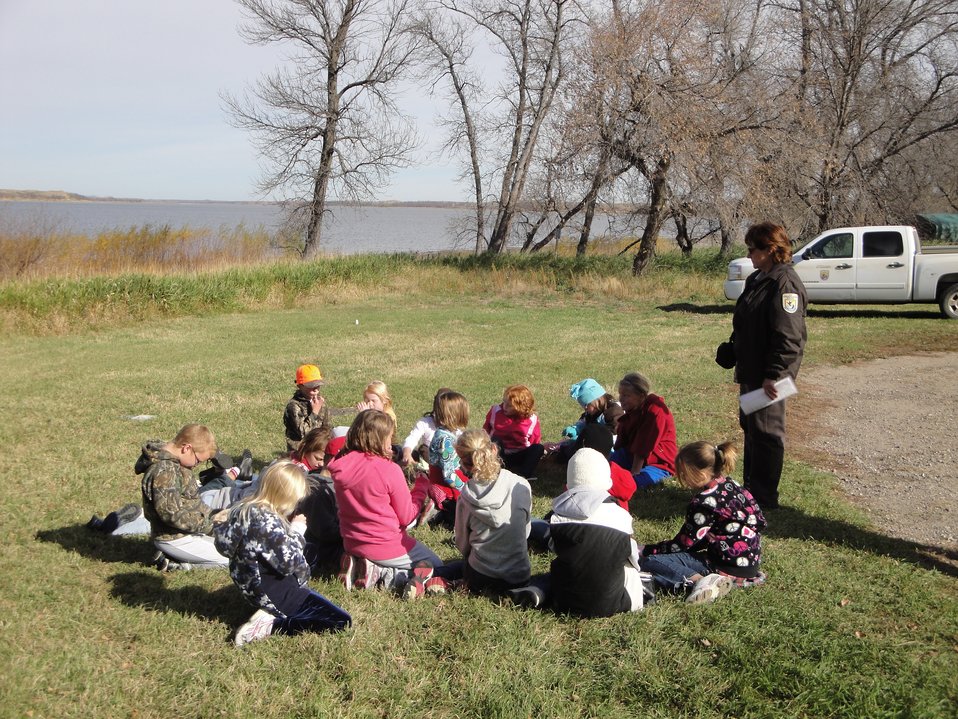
Youth at Arrowwood National Wildlife Refuge

Arrowwood NWR biologist Paulette Scherr explains the importance of conservation to a group of school children during National Wildlife Refuge Week, which takes place in October.